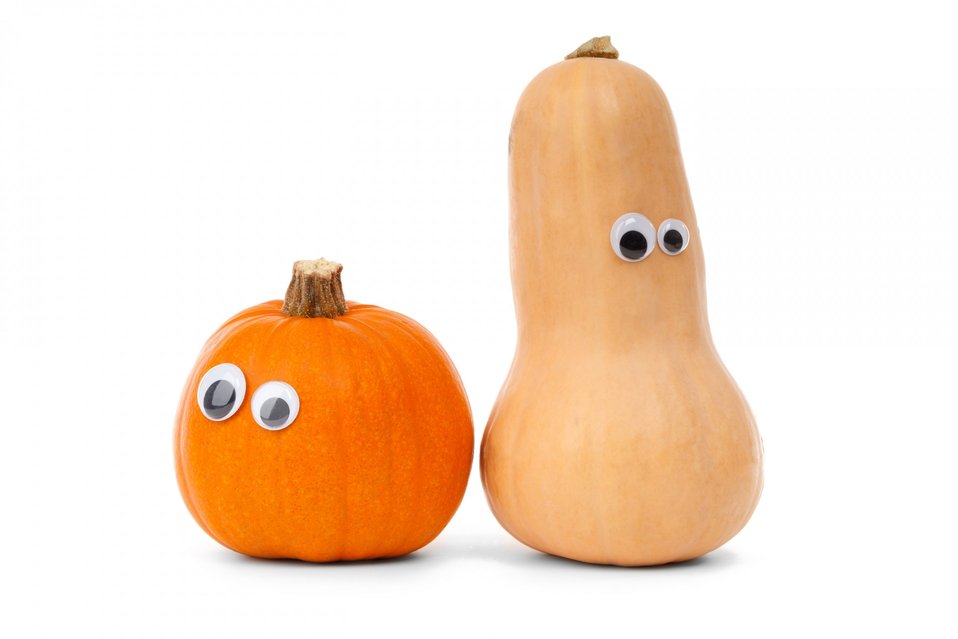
Funny pumpkin characters

Pumpkin faces isolated on white background. just add mouths to create various expressions.